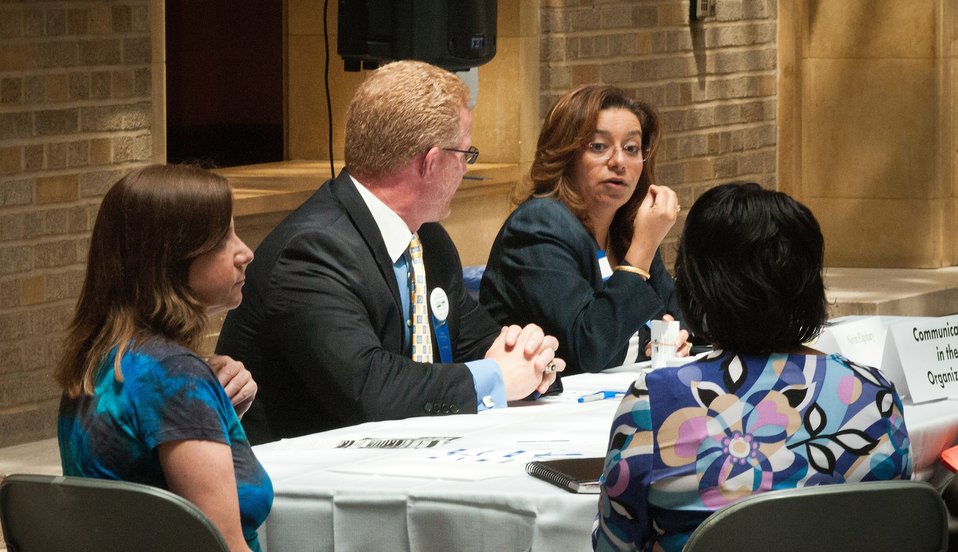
Rob Huttenlocker and Nivin Elgohay discuss Communicating in the Organization during Flash Mentoring Sessions to employees during one of the many forums held for the Rural Development Cultural Transformation Day event held in Washington, D.C. on Thursday, July 12, 2012.